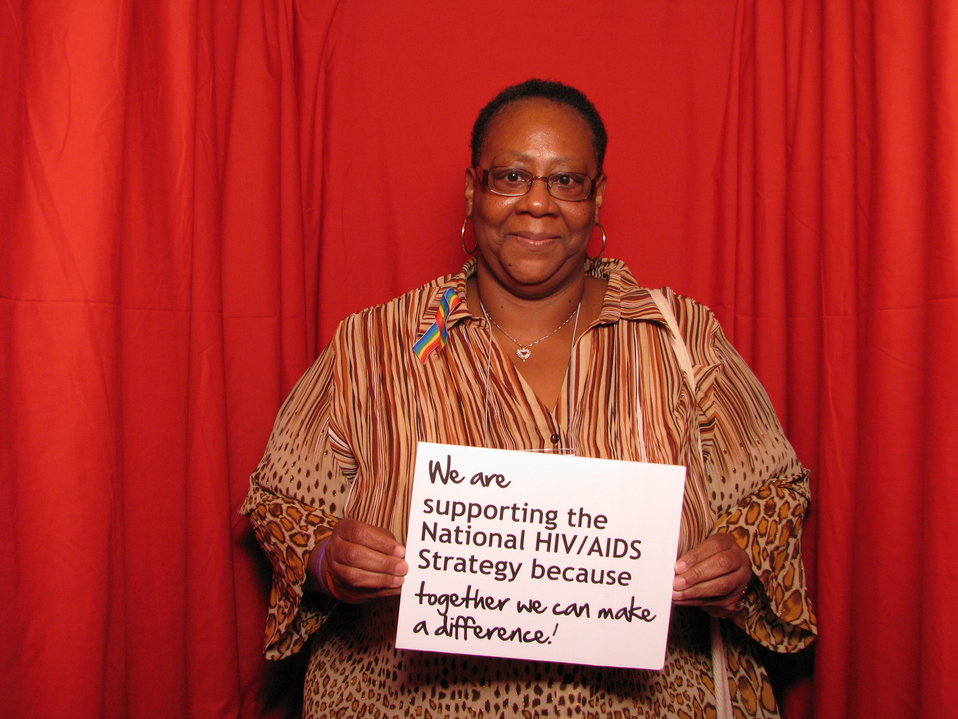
We are supporting the National HIV/AIDS Strategy because together we can make a difference!

From the AIDS.gov photo booth at the U.S. Conference on AIDS, September 2010 (Orlando, FL).